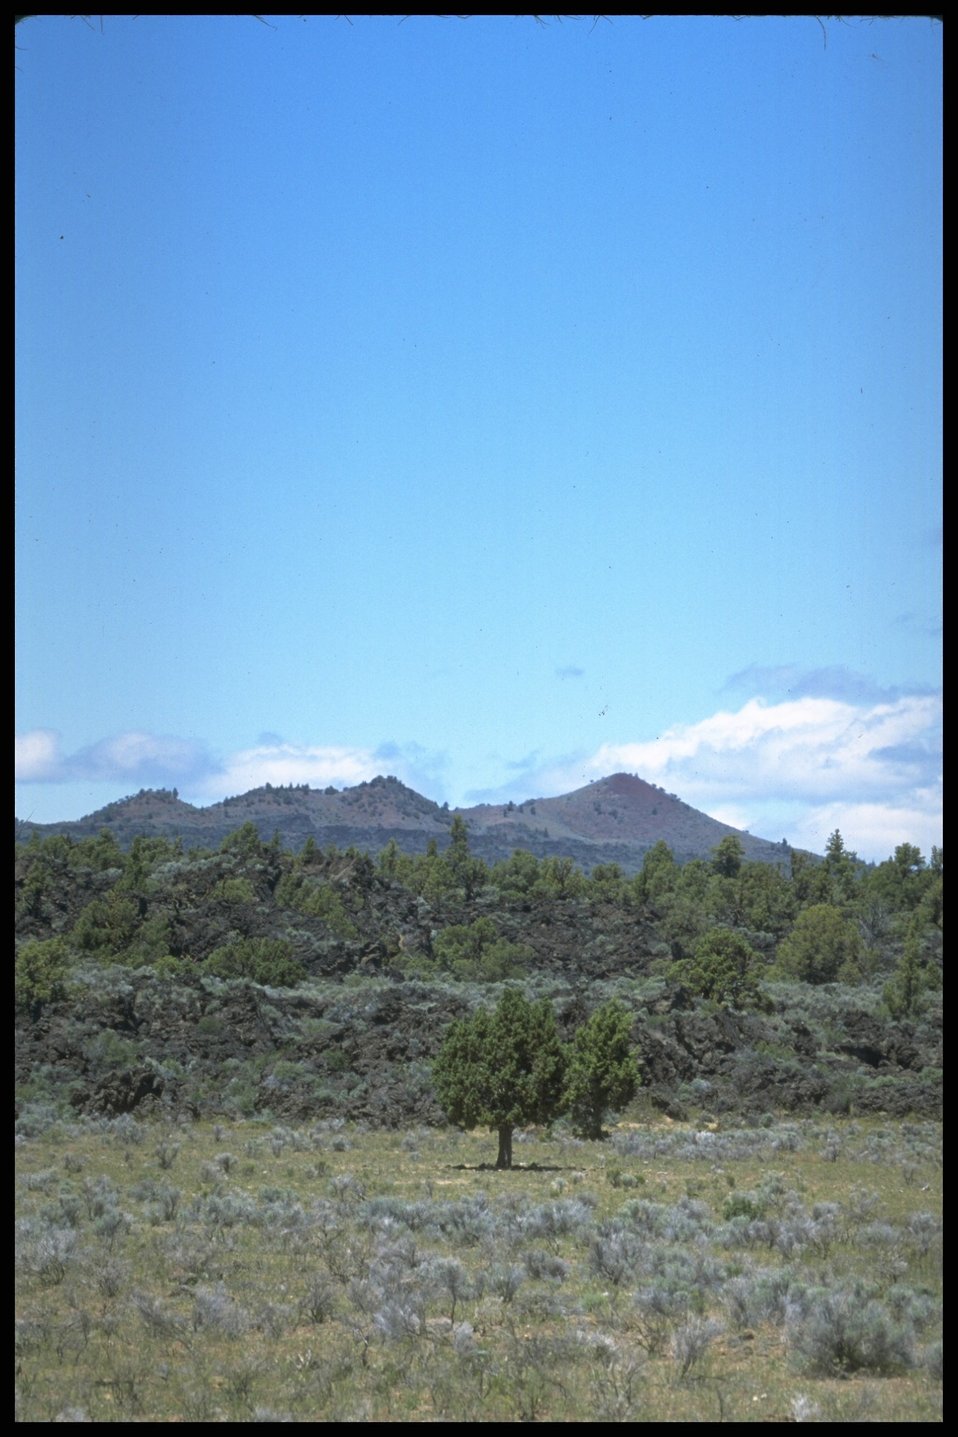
Far shot of lava beds, Lakeview District.